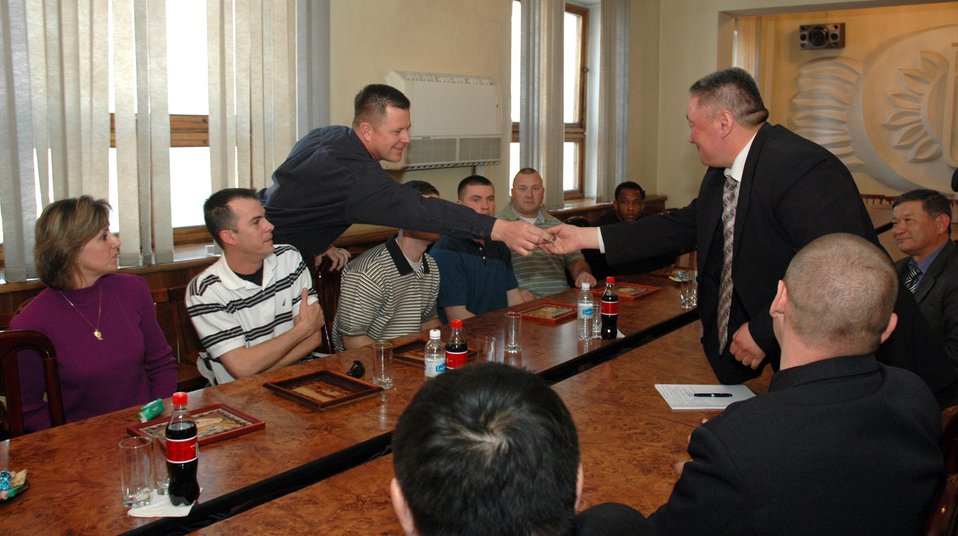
Manas Airmen reunite sister cities Bishkek, Colorado Springs

Major Scott Suckow presents a U.S. Air Force Academy coin March 14 to Urmatek Kadyrkulov, director of the Office of International Relations, for his help renewing sister city ties between Bishkek, Kyrgyzstan, and Colorado Springs, Colo. The coin was given on behalf fellow Airmen deployed to Manas Air Base. Major Suckow is assigned to the 376th Expeditionary Medical Group.